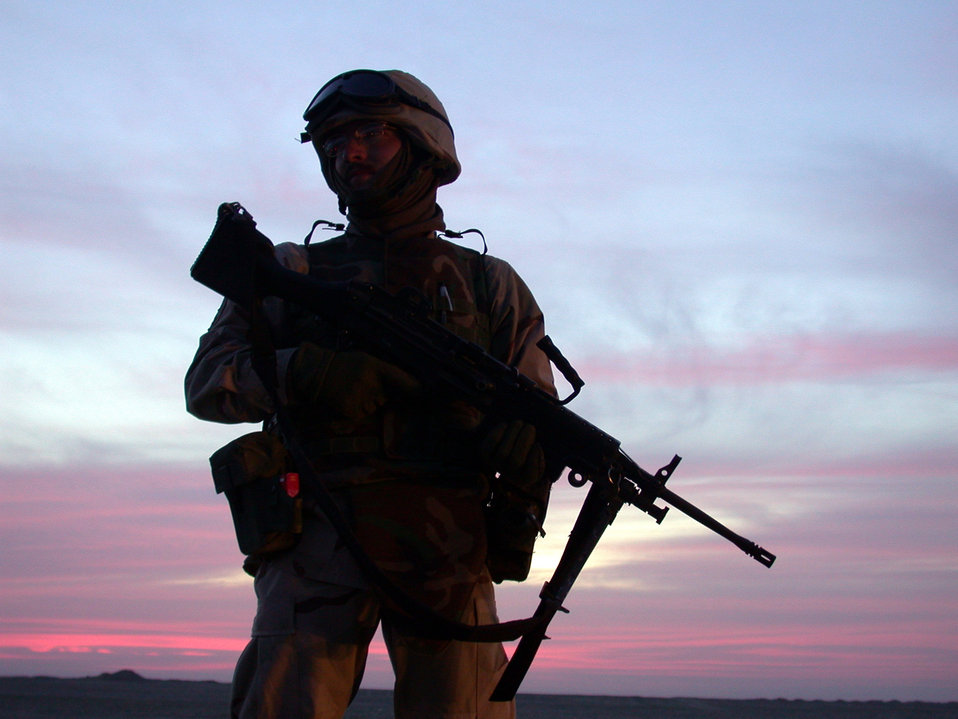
From dusk till dawn

SOUTHWEST ASIA -- Senior Airman Dustin Treadwell waits by for his convoy to depart March 8. Airman Treadwell is deployed from Ramstein Air Base, Germany.